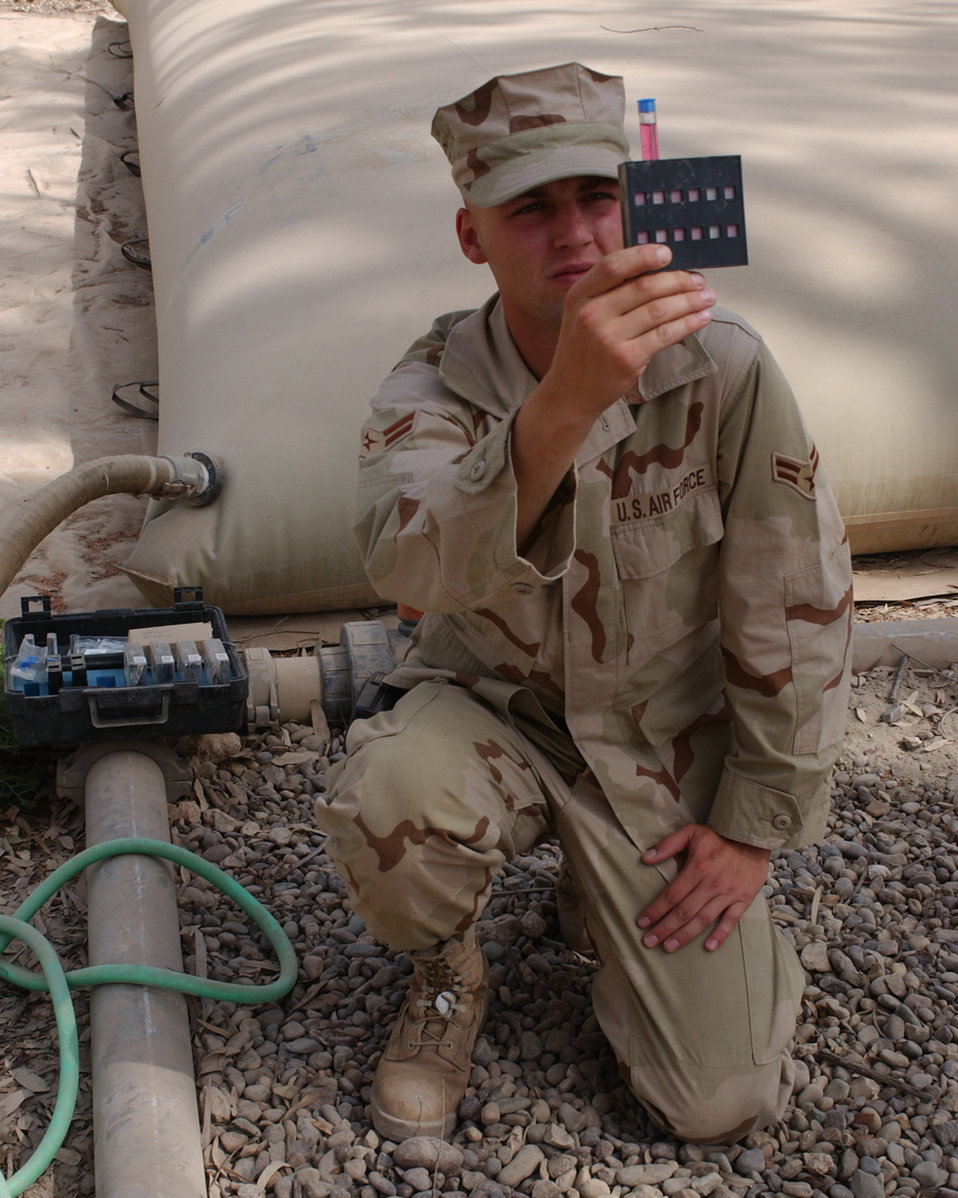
Deployed plumbers keep water flowing

BAGHDAD, Iraq -- Airman 1st Class Timothy Faulkner checks for contaminants in the water supply here. He is assigned to the 447th Expeditionary Civil Engineer Squadron and is deployed from Kadena Air Base, Japan.